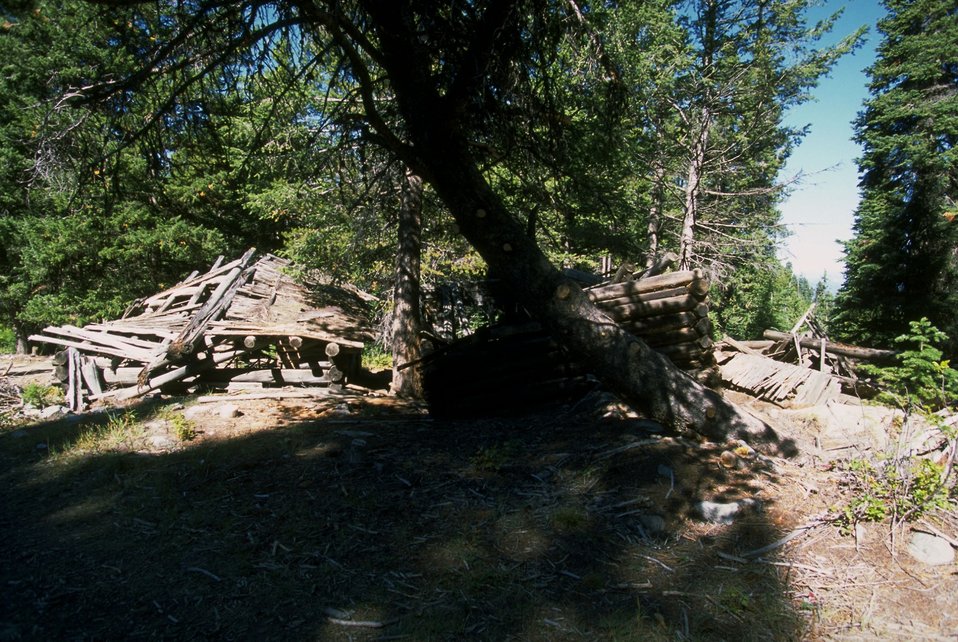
Old cabin in Coloma